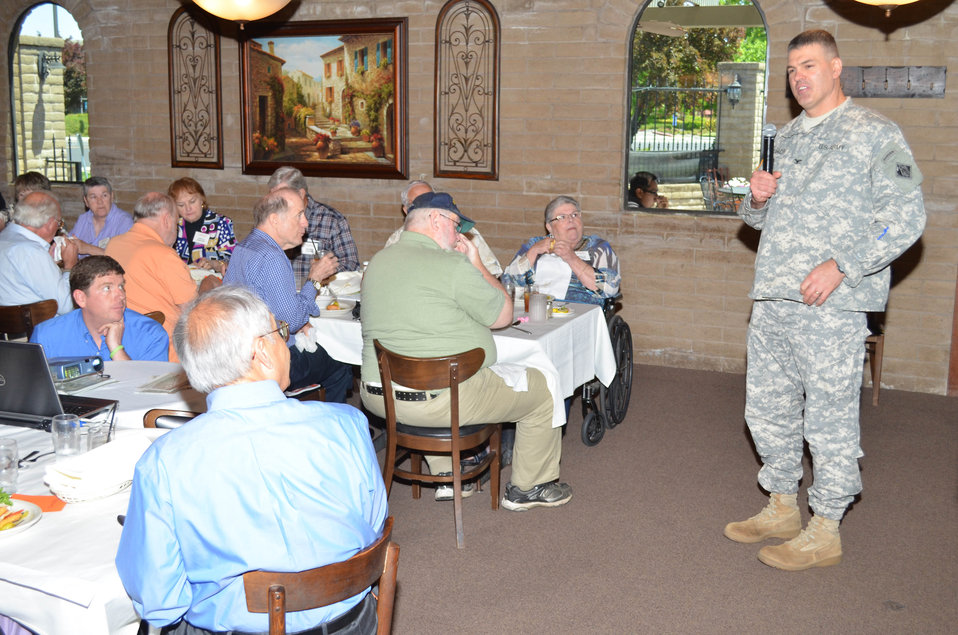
32nd annual retiree luncheon

Col. Bill Leady, commander of the U.S. Army Corps of Engineers Sacramento District, addresses retired employees at the district’s 32nd annual retiree luncheon at Club Pheasant in West Sacramento, Calif., May 23, 2013. The luncheon allows retired members to keep in touch and stay up to date on what the district is doing.